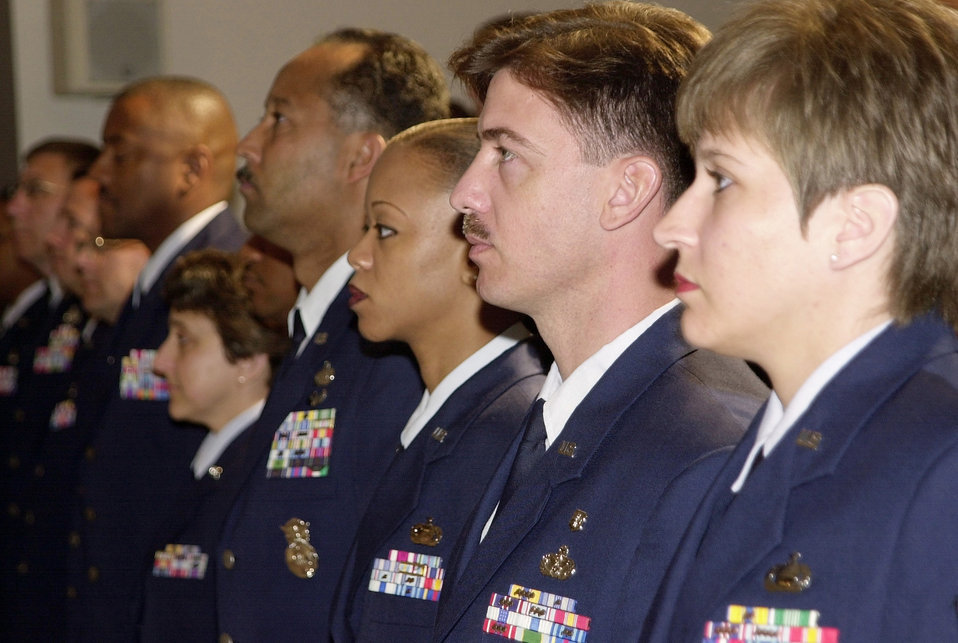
The 54

WASHINGTON -- In honor of the Air Force's 54th anniversary, 54 airmen, ranging in ranks from senior airman to chief master sergeant, gathered in the Pentagon auditorium on Sept. 17, 2001, for a special reenlistment ceremony co-hosted by Secretary of the Air Force Dr. James G. Roche and Chief of Staff of the Air Force Gen. John P. Jumper. After remarks from both co-hosts Gen. Jumper administered the oath of appointment to the 54 airmen then Dr. Roche presented his coin to each of the reenlistees.